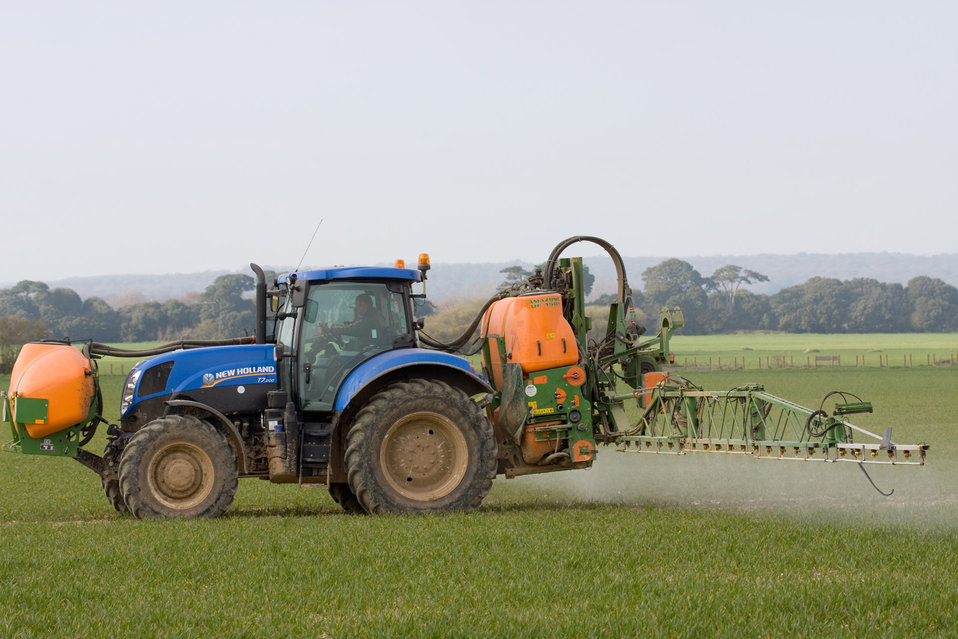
Tractor crop spraying on farmland in close-up.